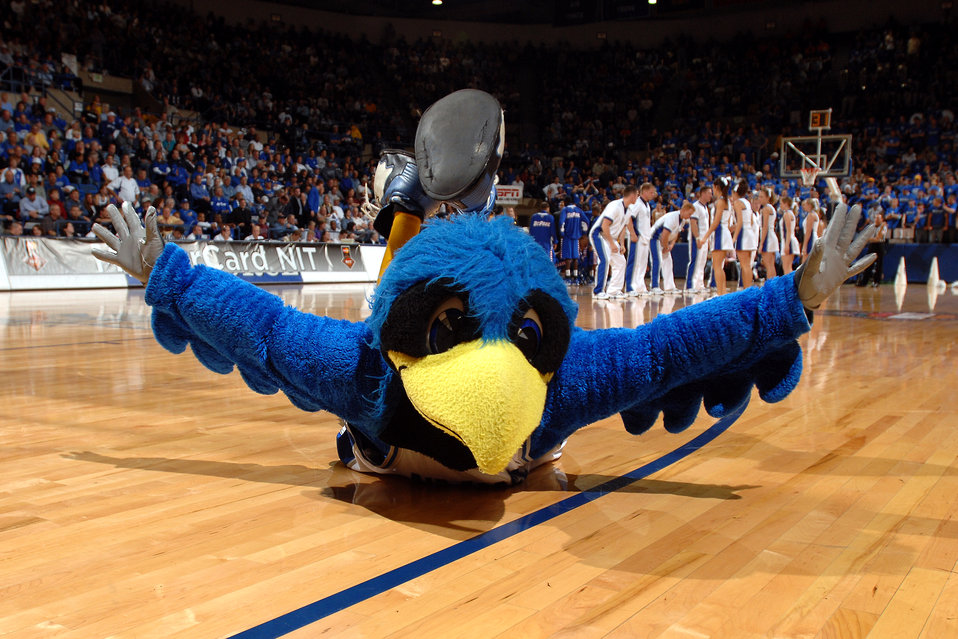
The Air Force has landed

The Bird sticks a landing during a timeout at the Air Force - DePaul NIT quarterfinal game March 21 at Clune Arena. The Falcons edged the Blue Demons 52-51 for a berth in the NIT semifinals in New York City March 27 against Clemson.